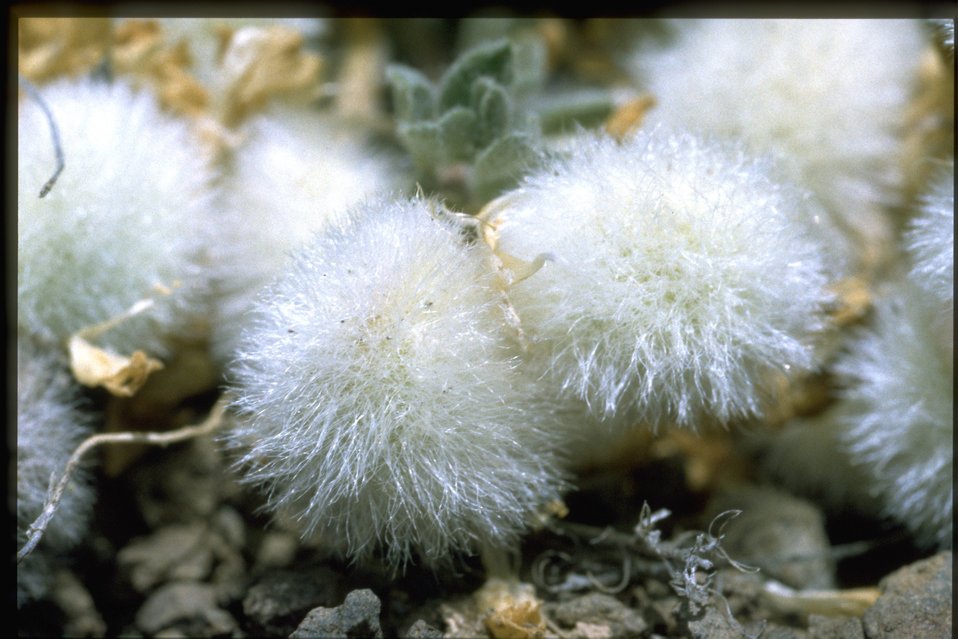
Closeup shot of woolypod milkvetch (Astragalus purshii) fruits.